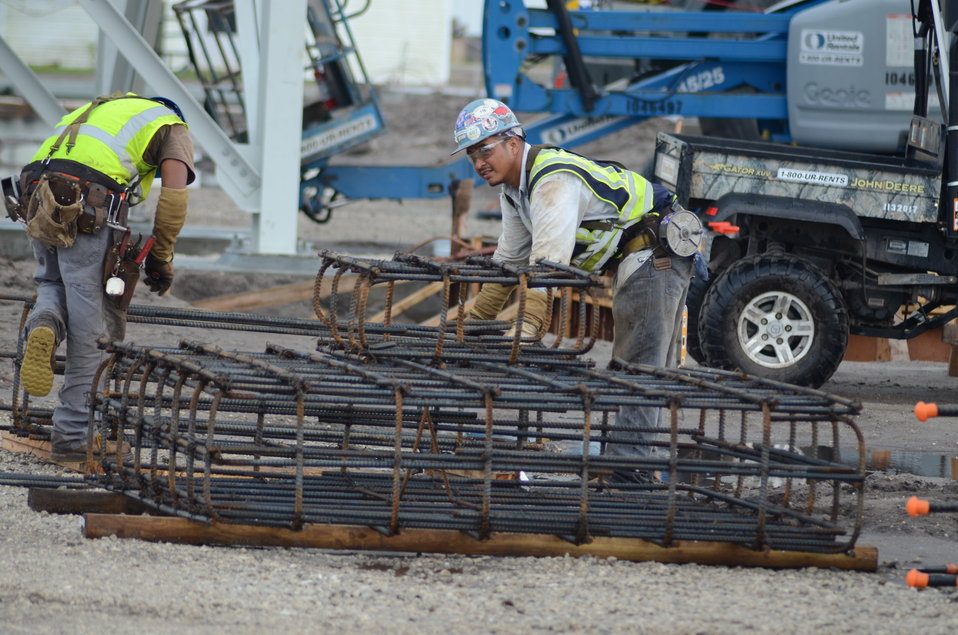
Construction personnel at work building the waste-to-energy INEOS bioprocessing facility in Florida, on Thursday, Aug. 11, 2011. The INEOS New Planed BioEnergy facility in Vero Beach, Florida, was granted a conditional Agriculture loan guarantee earlier this year to help build and operate a biorefinery capable of producing 8 million gallons per year of cellulosic ethanol and 6 megawatts of electricity.